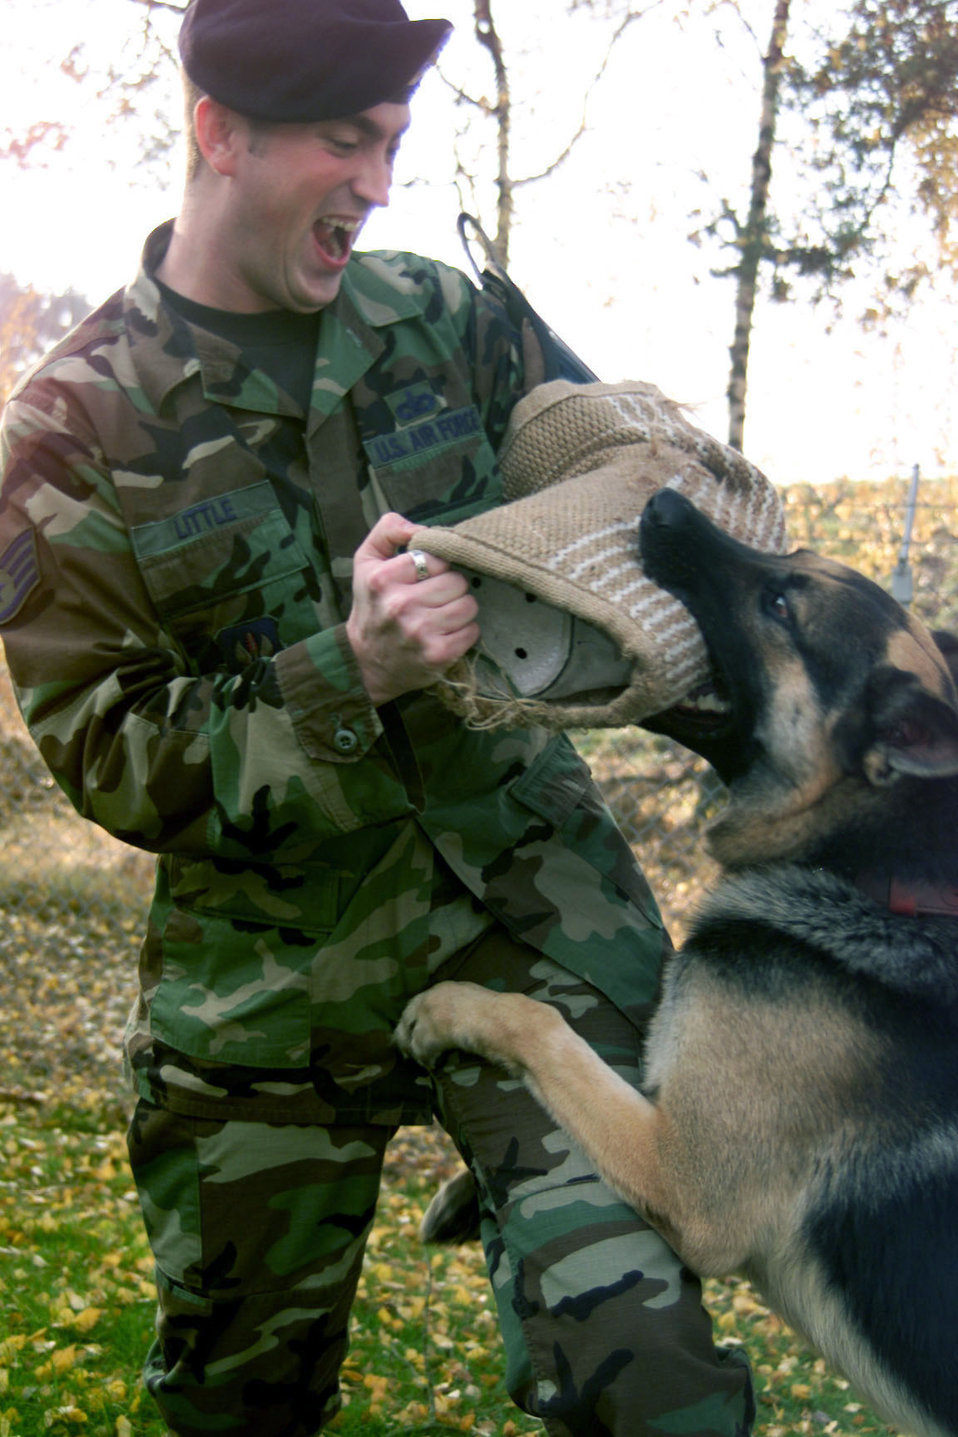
Down, boy!

SPANGDAHLEM AIR BASE, Germany -- Staff Sgt. Brian Little helps a German shepherd, Art, get into attack mode. Little uses an arm wrap made of tough plastic, leather and a burlap covering to protect himself from injury. The dogs, much like airmen, must attend technical school and undergo on-the-job-training. The dogs go to school at Lackland Air Force Base, Texas. Little is a military working dog trainer assigned to the 52nd Security Forces Squadron.